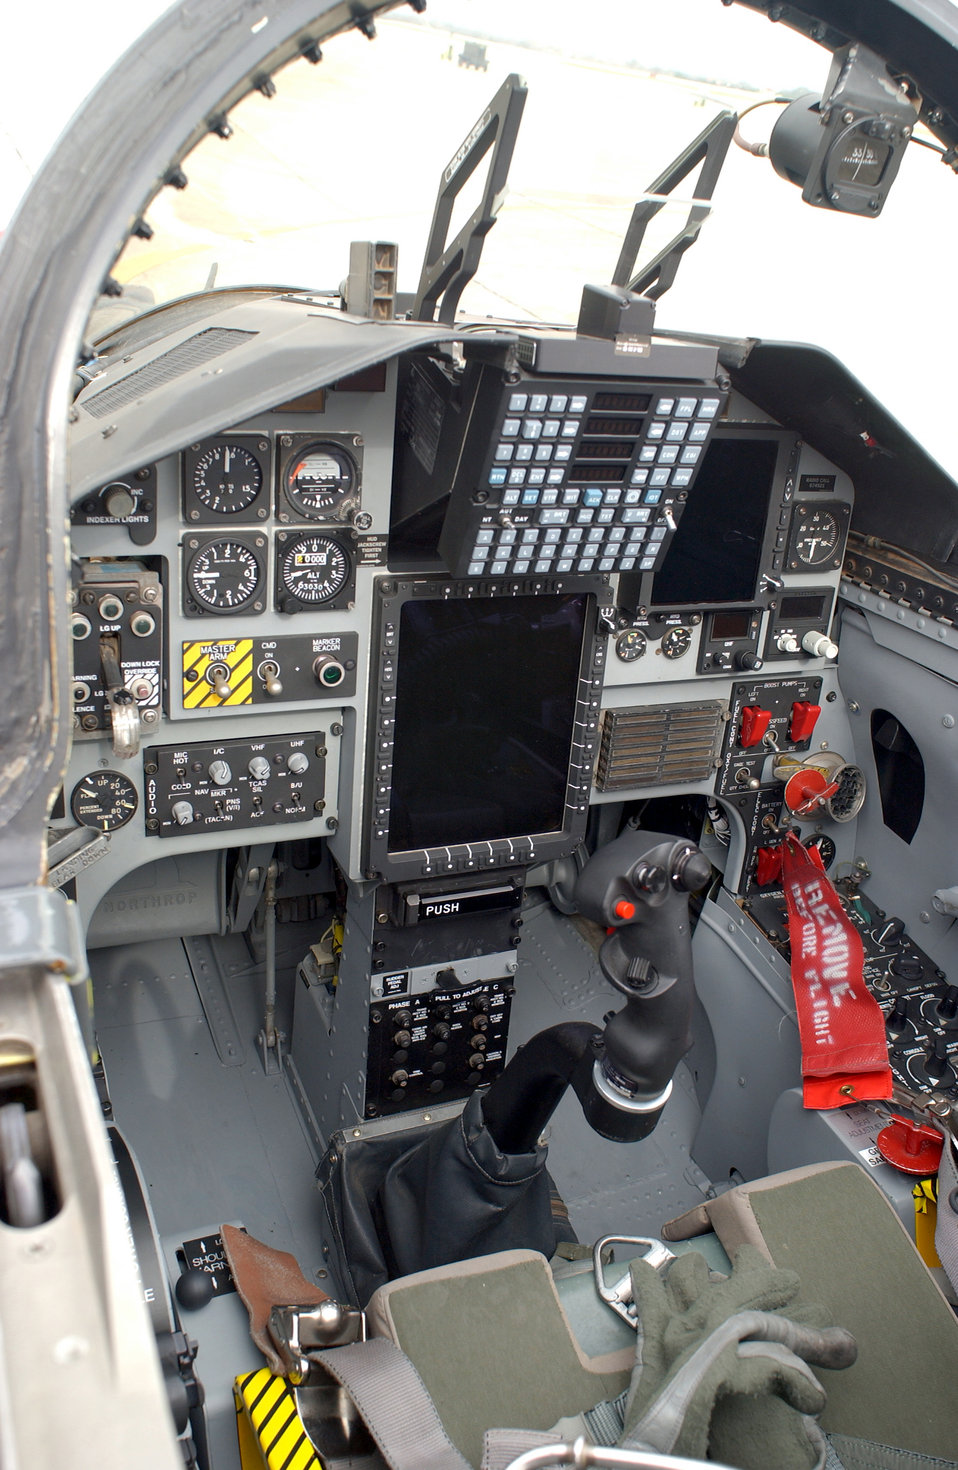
The Talon arrives

RANDOLPH AIR FORCE BASE, Texas -- The interior of the T-38C Talon trainer features improved avionics and support systems that make it closer in design to fighter aircraft like the F-15 Eagle, F-16 Fighting Falcon and F/A-22 Raptor.